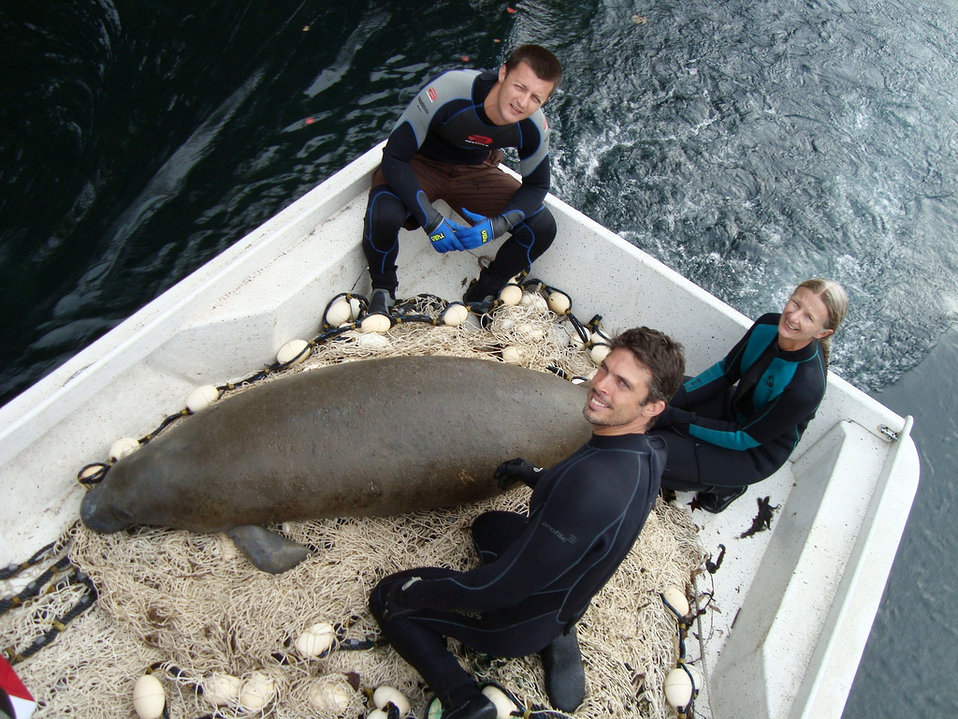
Endangered Florida manatee (Trichechus manatus), Crystal River National Wildlife Refuge

Photo credit: Ted Palfy

USFWS Manatee Rescue staff smile after a successful rescue of a sub-adult manatee that had swallowed fishing line with a hook. The manatee was fully rehabilitated at Sea World and named Captain after its release.

The Crystal River National Wildlife Refuge, was established in 1983 specifically for the protection of the endangered West Indian Manatee. This unique refuge preserves the last unspoiled and undeveloped habitat in Kings Bay, which forms the headwaters of the Crystal River. The refuge preserves the warm water spring havens, which provide critical habitat for the manatee populations that migrate here each winter.